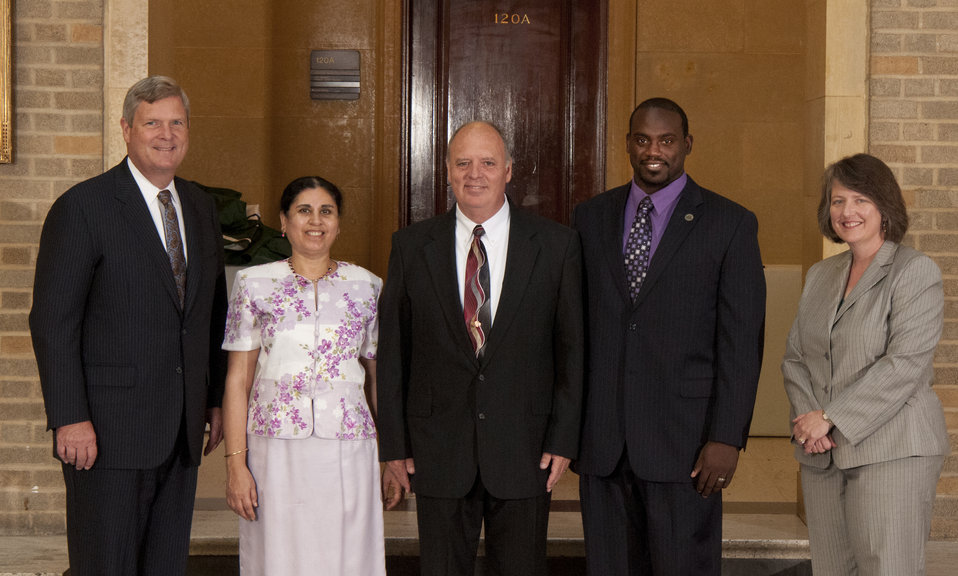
Agriculture Secretary Tom Vilsack and Deputy Agriculture Secretary Kathleen Merrigan with Honor Award Group Operations and Asset Management Division, Rural Development (RD) Rural Housing on the patio of the U.S. Department of Agriculture in Washington, D.C. on Wednesday, Sept. 12, 2012. The Operations and Asset Management Division received their award for outstanding achievements in promoting reduced costs and transparency in Multi-Family Housing’s funding application process by automating and simplifying application forms and promoting the use of electronic application submissions.